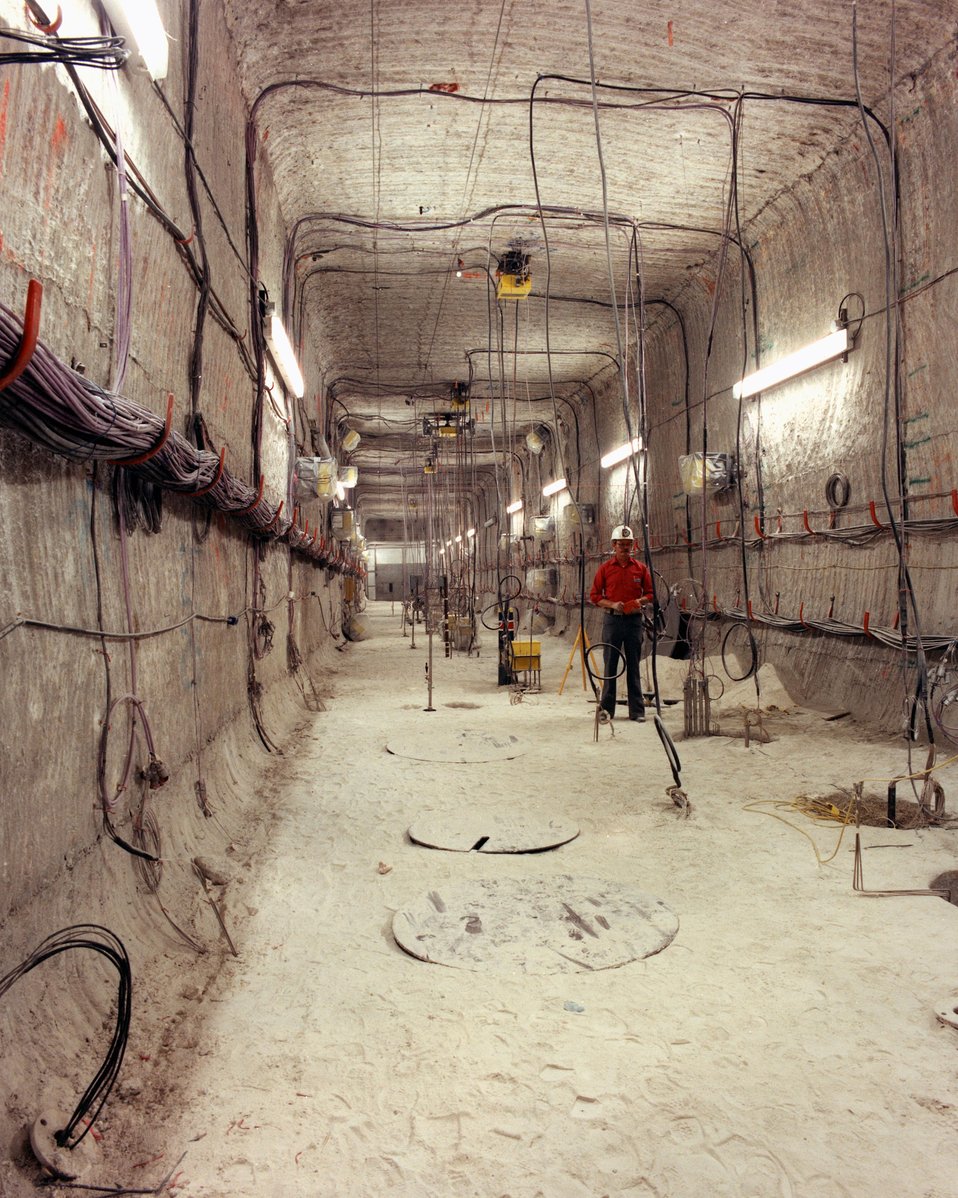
THERMAL OVER TEST ROOM (ROOM B).

THE WASTE ISOLATION PILOT PLANT IS A DOE RESEARCH AND DEVELOPMENT FACILITY FOR DEMONSTRATING THE SAFE DISPOSAL OF TRANSURANIC RADIOACTIVE WASTES. TEST SHAFTS HAVE BEEN DRILLED TO A DEPTH OF 2,100 FEET. THE SHAFTS, ONE 6 FEET IN DIAMETER AND THE OTHER 12 FEET IN DIAMETER, PROVIDE AN ENTRY PASSAGE AND VENTILATION TO THE UNDERGROUND SALT ROCK FORMATION THAT IS BEING TESTED TO DETERMINE ITS SUITABILITY FOR RADIOACTIVE WASTE STORAGE. THIS TEST ROOM IS 18 FEET WIDE BY 300 FEET LONG.